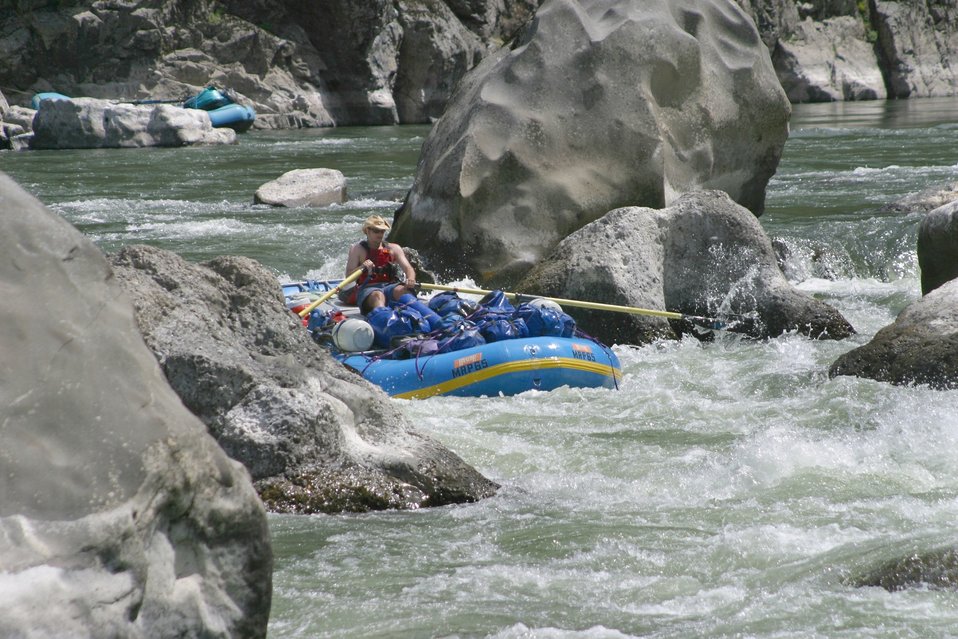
Wild section of the Rogue River from Grave Creek to Foster Bar May 19 to May 22.